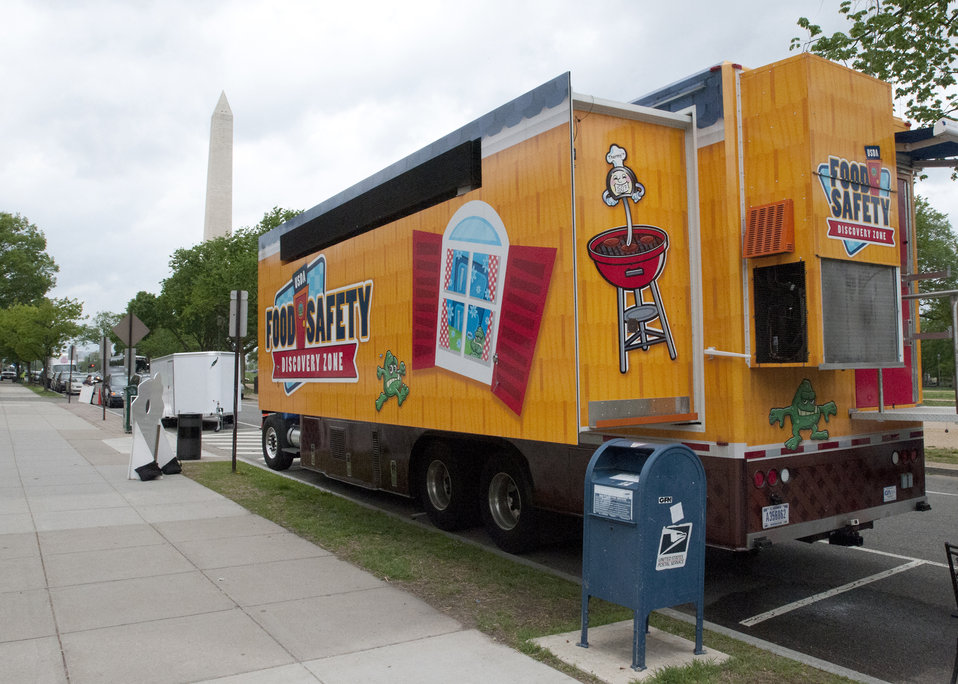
The Food Safety Discovery Zone is a 40-foot truck that features several hands-on, interactive activities, cool lighting and sound effects, and eye-catching educational tools to teach the four easy steps that families can take to avoid food borne illness. The truck was parked in front of the U. S. Department of Agriculture (USDA) as part of USDA’s “Take Your Child to Work Day” event held, in Washington, DC, on Thursday, April 28, 2011.